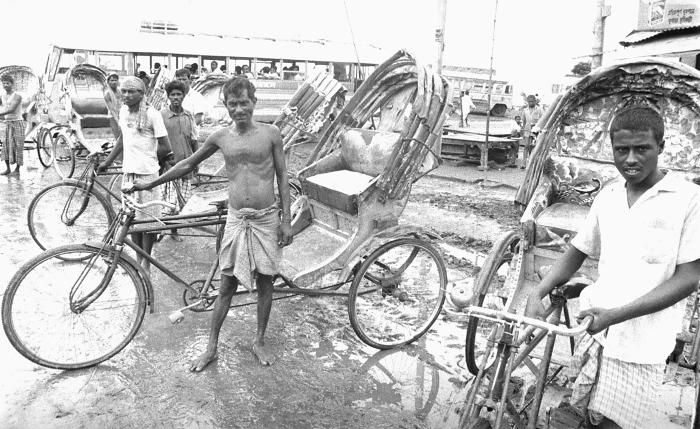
These Bangladeshi rickshaw drivers were photographed here as they were awaiting customers. This photograph provided by Dr. Stan Foster, and captured by Pierre Claquin, M.D., B.A.C., who at the time was a member of the World Health Organization's Smallpox Eradication Program. It was part of a series photographed by former E.I.S. officer, Stanley O. Foster M.D., M.P.H., and was one of a series entitled 'The Story of One Smallpox Jeep', which depicted the travails faced by the jeep, and its occupants of public health practitioners, as they road through the Bangladesh countryside in an attempt to eradicate smallpox from the country.